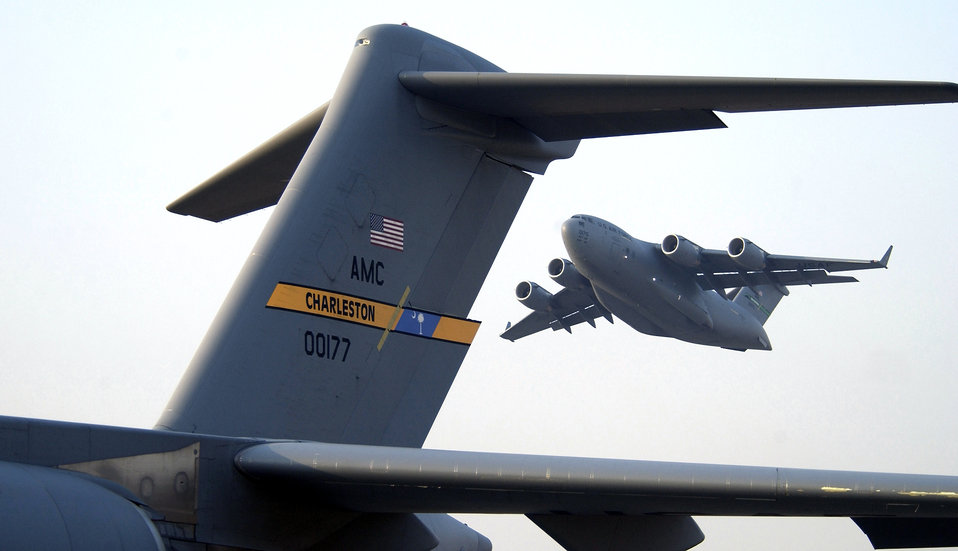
Globemaster III transports troops

OPERATION IRAQI FREEDOM -- A U.S. Air Force C-17 Globemaster III transporting U.S. Army and Air Force troops forward takes off from an air base in Europe in support of Operation Iraqi Freedom on March 26. Operation Iraqi Freedom is the multi-national coalition effort to liberate the Iraqi people, eliminate Iraq's weapons of mass destruction, and end the regime of Saddam Hussein.